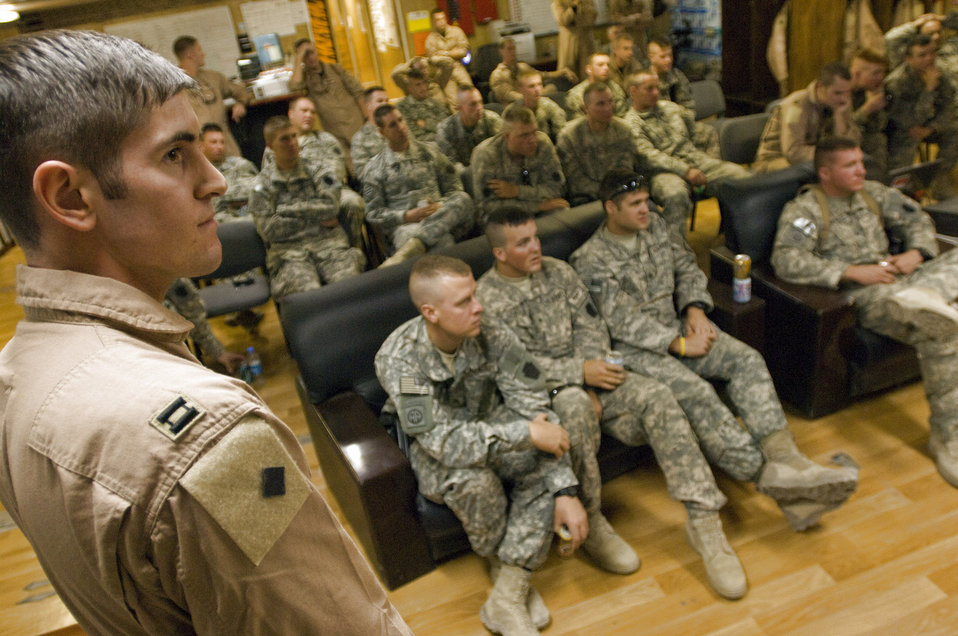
Air support unites Airmen, Soldiers in Afghanistan

Capt. Scott Crowell briefs on F-15E Strike Eagle capabilities to Pennsylvania Army National Guard Soldiers during an Oct. 28 visit to Bagram Airfield, Afghanistan. Members from the 391st Expeditionary Fighter Squadron and the 75th Expeditionary Fighter Squadron hosted the Soldiers who wanted to thank the pilots who protect ground forces with close-air support while engaged in firefights with enemy forces. Captain Crowell is an F-15E Strike Eagle pilot.